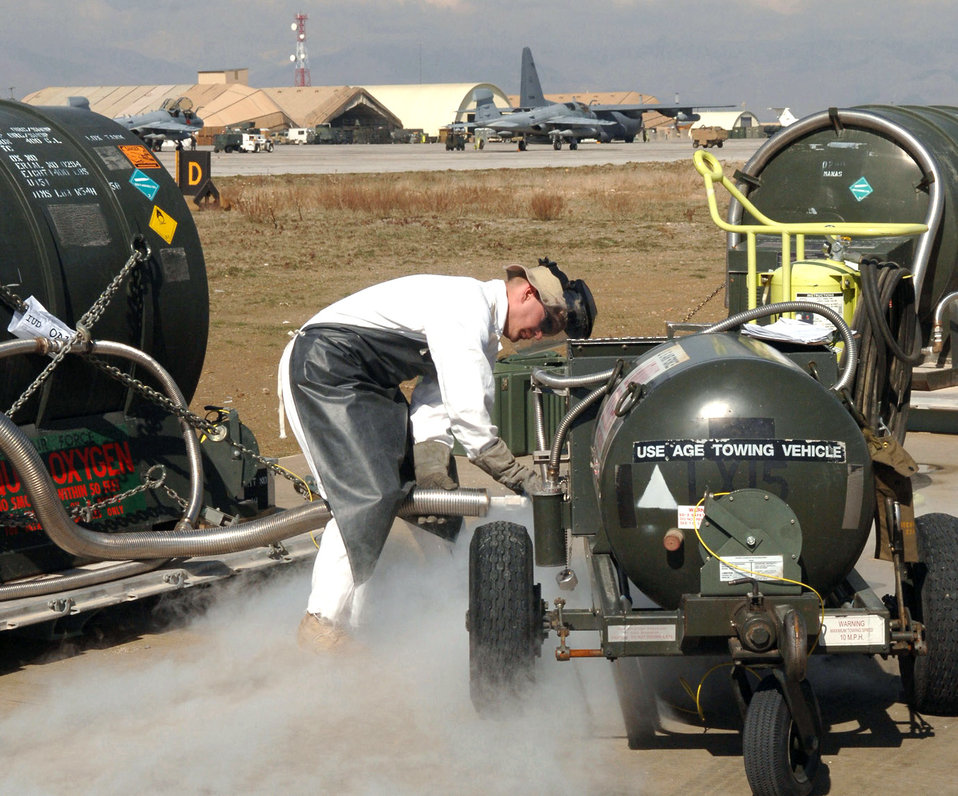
Fueled and ready

Senior Airman Michael Brady disconnects the issue line of a 400-gallon liquid oxygen tank from a 50-gallon cart at Bagram Air Base, Afghanistan, Saturday, Feb. 18, 2006. Liquid oxygen tanks are checked and filled twice daily. Airman Brady a fuels laboratory technician with the 455th Expeditionary Logistics Readiness Squadron petroleum oil and lubricant element.